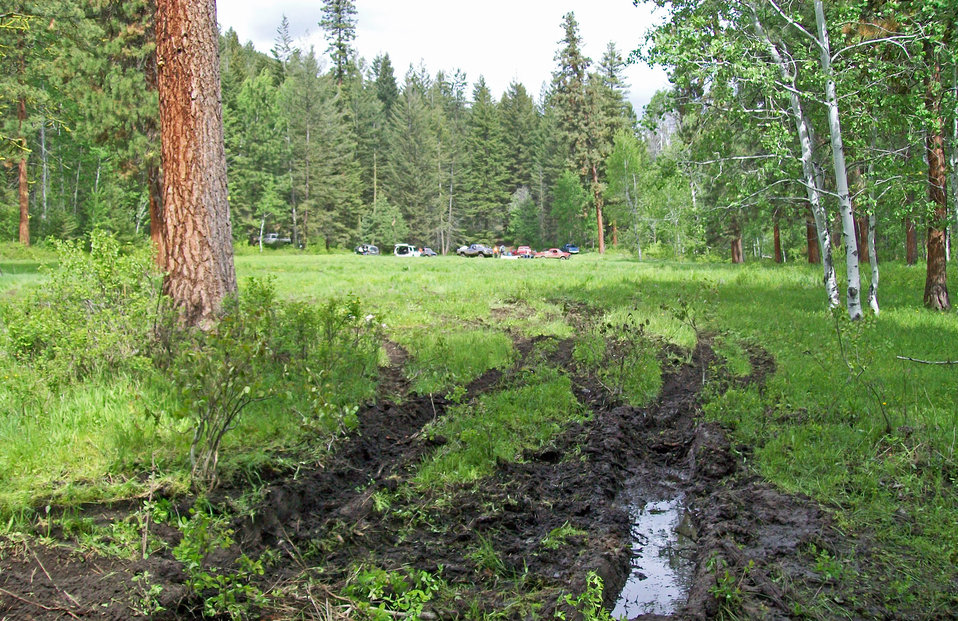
mudding 100 0939a

The aftermath of 'mudders' driving their vehicles through a pristine meadow on the Okanogan-Wenatchee National Forest in Washington. Participants could face charges including malicious mischief and fines up to and including paying for the costs of restoration.